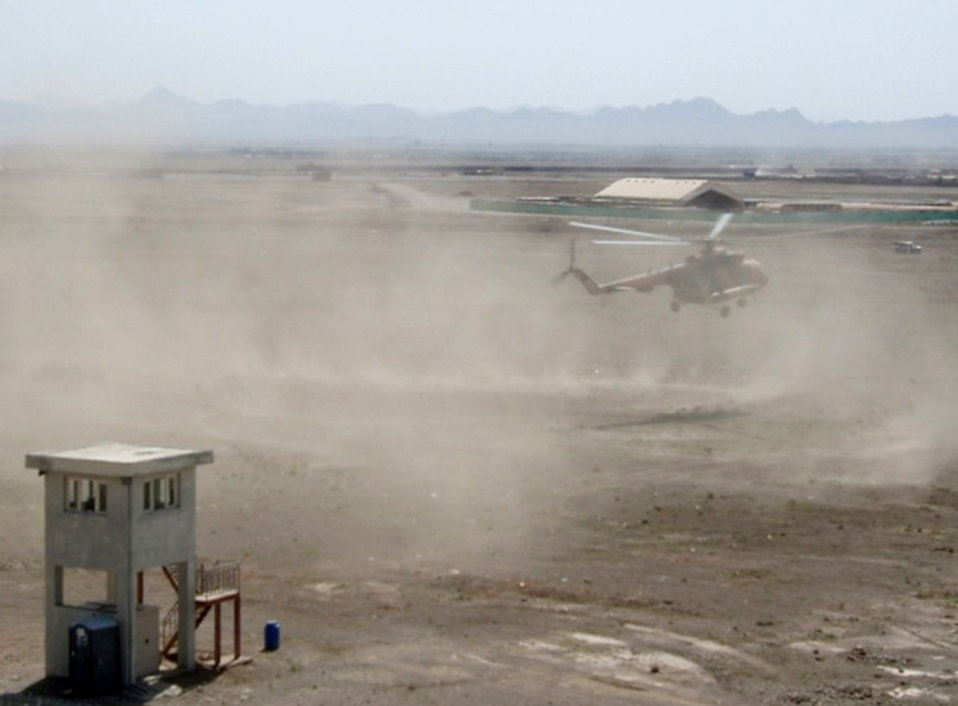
Afghan Mi17 advisers

Air Force advisers and Afghan air force instructors and students conduct joint air-assault training near Kabul, Afghanistan. Seven Afghan Mi-17 instructors graduated May 4, 2011, from the first Mi-17